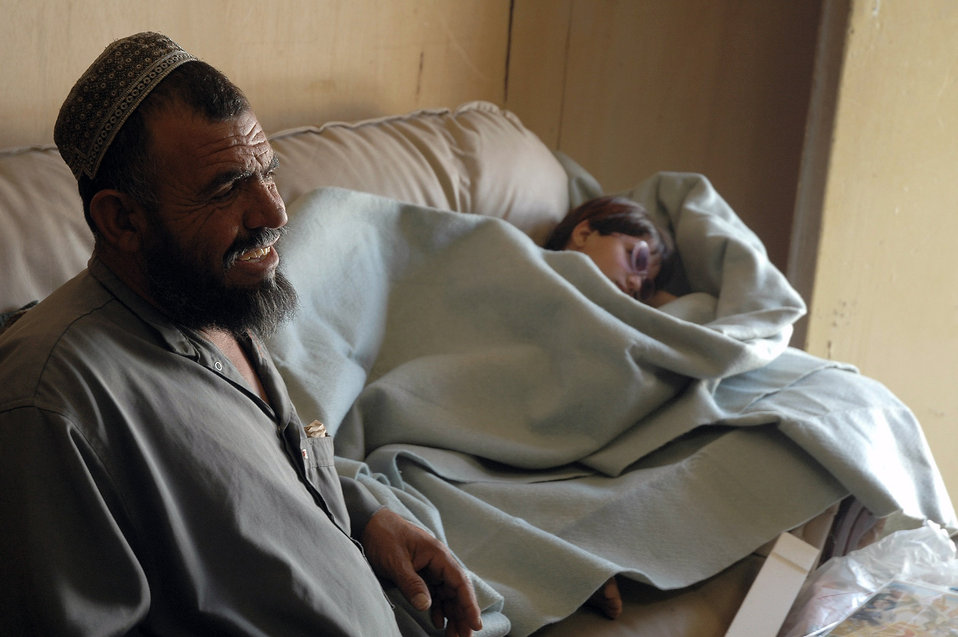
Coalition doctors remove tumor, save Afghan girl's life

Abdullah Haqim, father of 6-year-old, Gulzana, smiles as he talks of her condition to a U.S. Special Forces doctor at Bagram Air Field, Afghanistan on July 10. Coalition doctors treated Gulzana for a tumor over her eye -- an affliction that has an extremely low chance of survival in Afghanistan if not treated properly.